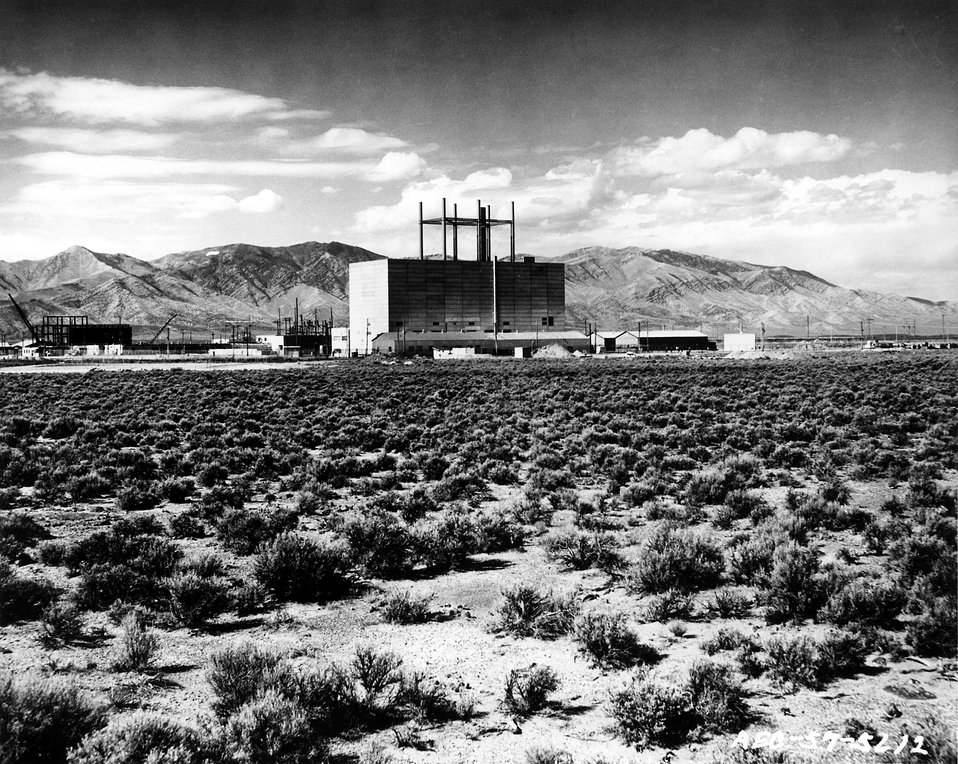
National Reactor Testing Station, Idaho... Overall view of Naval Reactors Facility at the Atomic Energy Commission's National Reactor Testing Station, Idaho. Circa 1957.